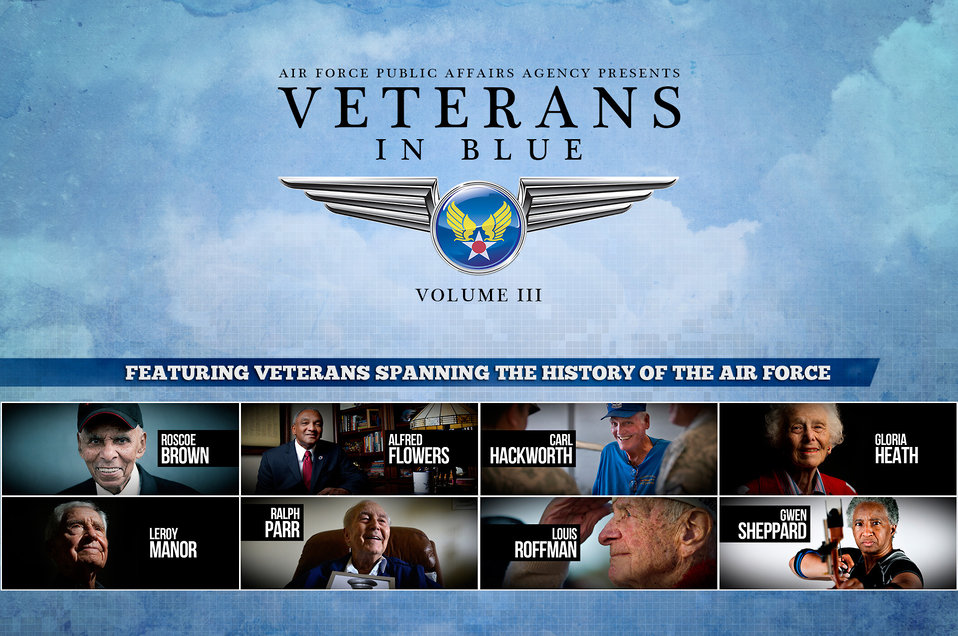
Veterans in Blue highlights 19 personal stories of heroism from World War II to today.